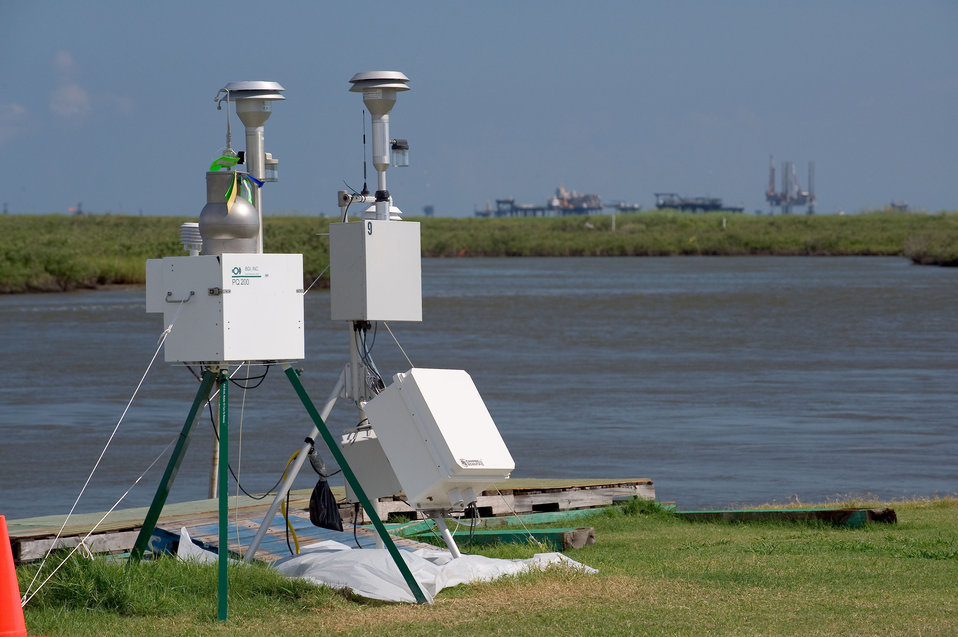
August 7, Air sampling station, near Port Fourchon, La

While much attention has turned to managing oil waste from the spill, EPA continues to monitor and sample air and water conditions.

Air sampling station near Port Fourchon, La.